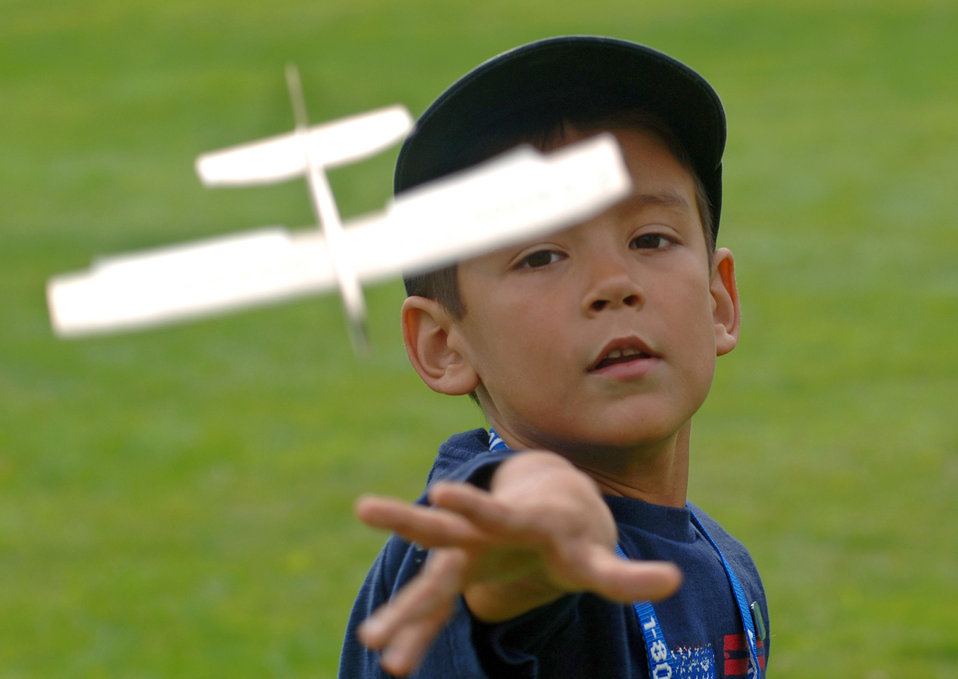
Astronaut orbits Air Force Week science day

Thomas Fougery, 6, from Londonderry, N.H., tosses his balsa wood aircraft for it's first flight after completing an airplane building station as part of Air Force Week New England's Science Day Aug. 21at Concord, N.H. The Christa McAuliffe Planetarium hosted the Air Force New England Science Day, which provided children and adults hands on displays of Air Force equipment, a model rocket launch demonstration, an F-16 Fighting Falcon static display, and